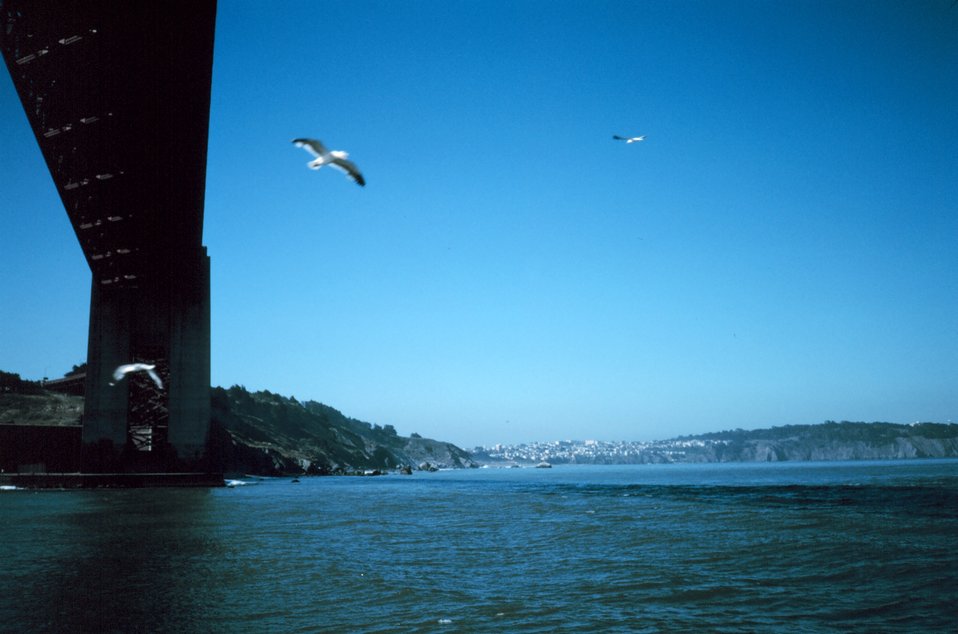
The Golden Gate Bridge as seen from a small boat at mid-span looking to the north.